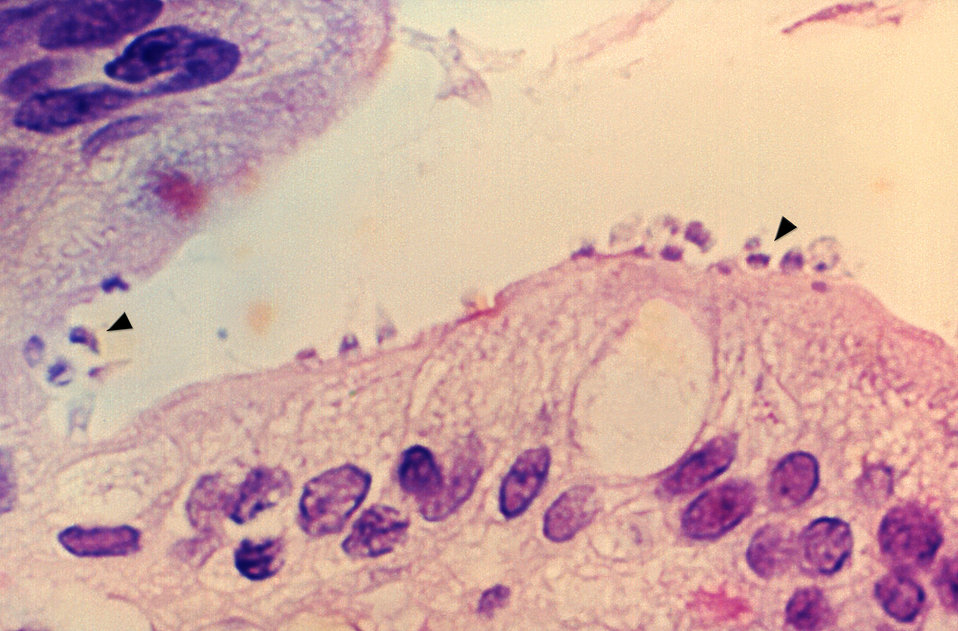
Under high magnification, this photomicrograph reveals some of the histopathologic changes displayed by a section in small bowel tissue biopsy in a case of cryptosporidiosis due to an unknown specie of Cryptosporidium. In this particular view, Cryptosporidium parasites can be seen parasitizing the small bowel epithelial cell lining